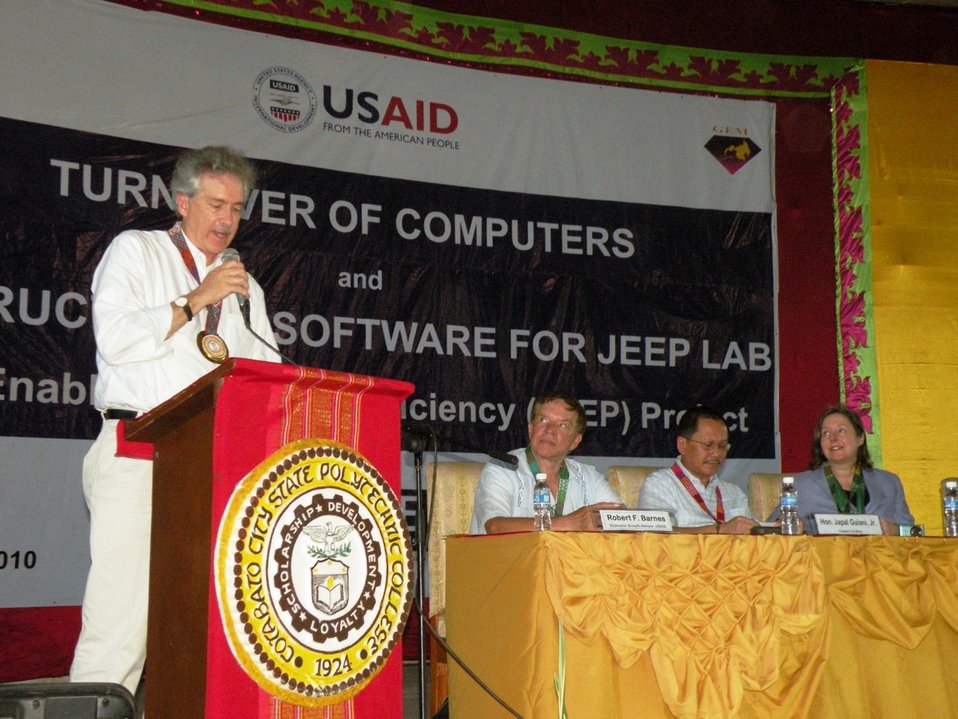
Under Secretary Burns Delivers Remarks

U.S. Under Secretary William J. Burns delivers remarks at the USAID-funded project in Cotabato, Mindanao, Philippines, on July 21, 2010. Individuals on stage include (L to R): Robert Barnes of USAID, Cotobato Mayor Japal Guiani, and U.S. Deputy Chief of Mission Leslie Bassett.